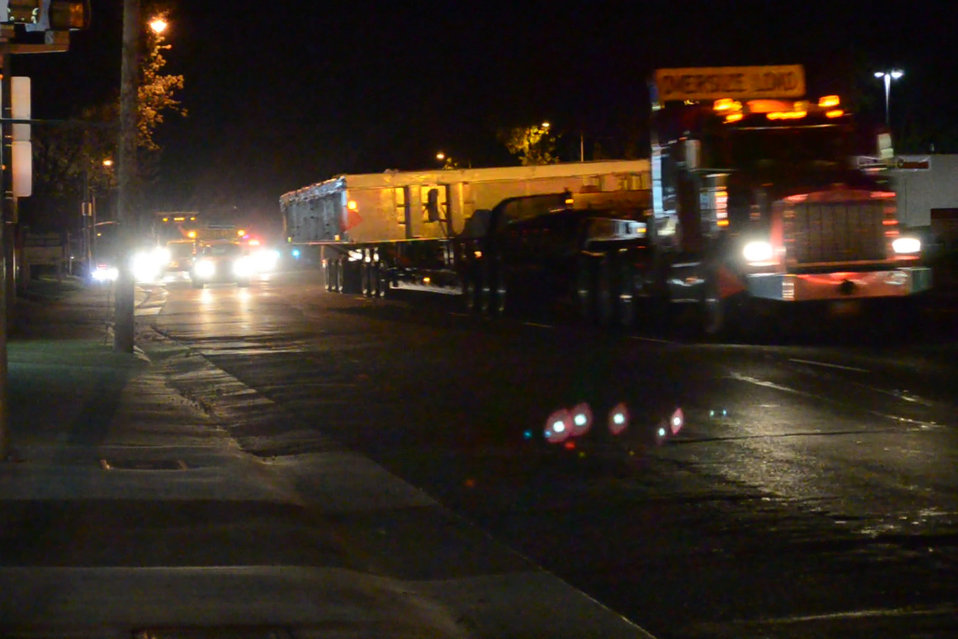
First giant gate arrives for Folsom Dam auxiliary spillway

A 100-foot-long flatbed truck carrying the first of 12 giant gates for the new auxiliary spillway at Folsom Dam arrives at the intersection of Madison Avenue and Sunrise Boulevard in Sacramento, Calif., March 13, 2014, after a 600-mile journey from the Oregon Iron Works facility in Vancouver, Wash. The auxiliary spillway project is part of the Joint Federal Project, a $900-million cooperative effort to improve the safety of Folsom Dam and reduce flood risk for the Sacramento area. (U.S. Army video image by Todd Plain/Released)